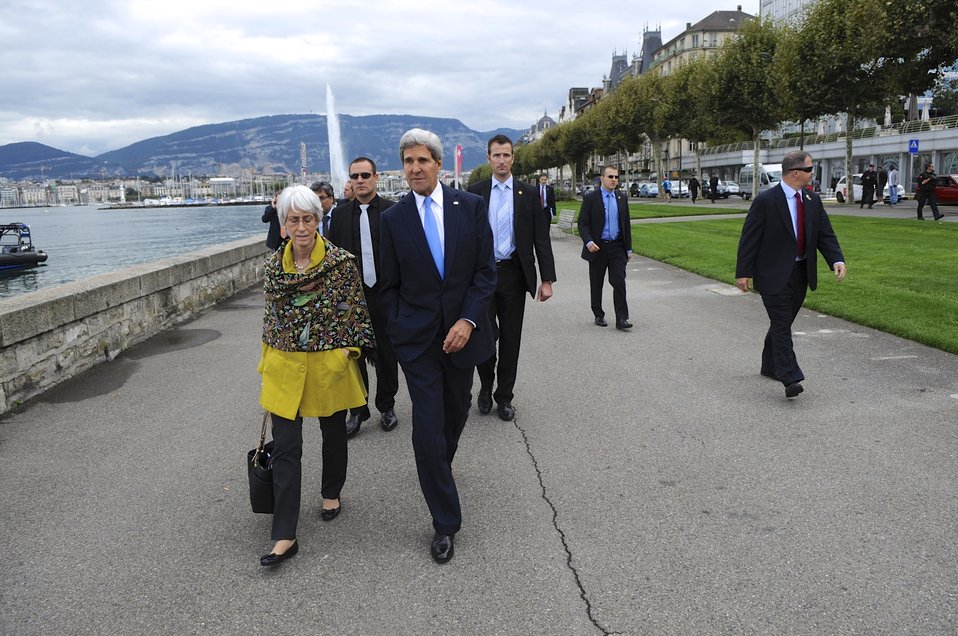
Secretary Kerry, Undersecretary Sherman Take Walk Along Lake Geneva

4:21 p.m., September 12, 2013 - U.S. Secretary of State John Kerry and Undersecretary of Political Affairs Wendy Sherman take a walk along Lake Geneva following a working lunch with members of his senior staff focused on upcoming negotiations with Russian officials about eliminating Syrian chemical weapons.